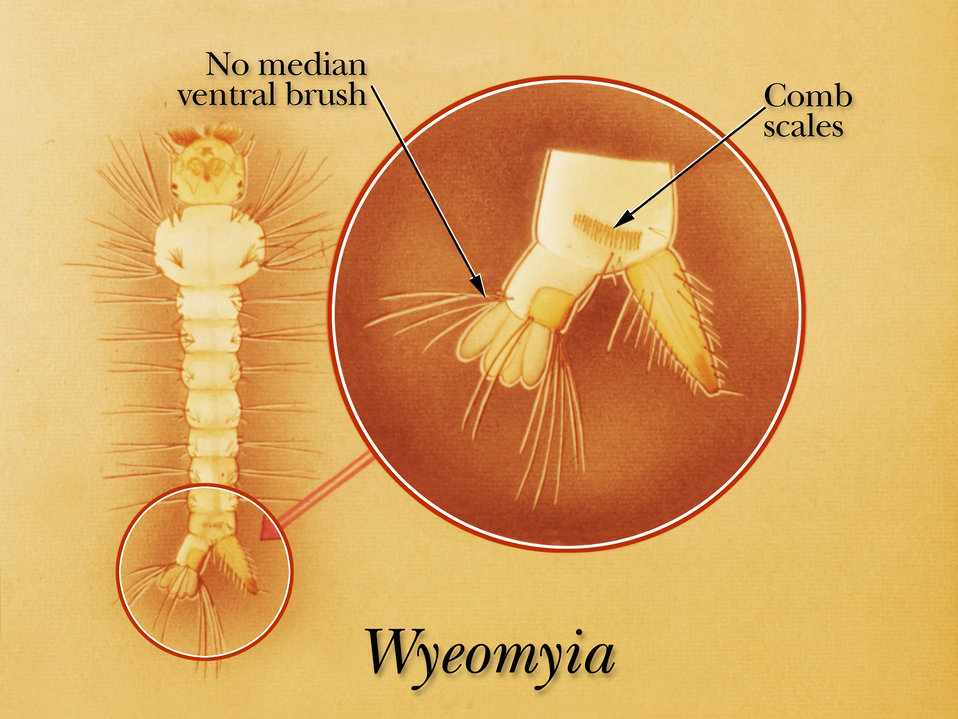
An illustration identifying the comb scales on the eighth terminal segment of a Wyeomyia mosquito larva.